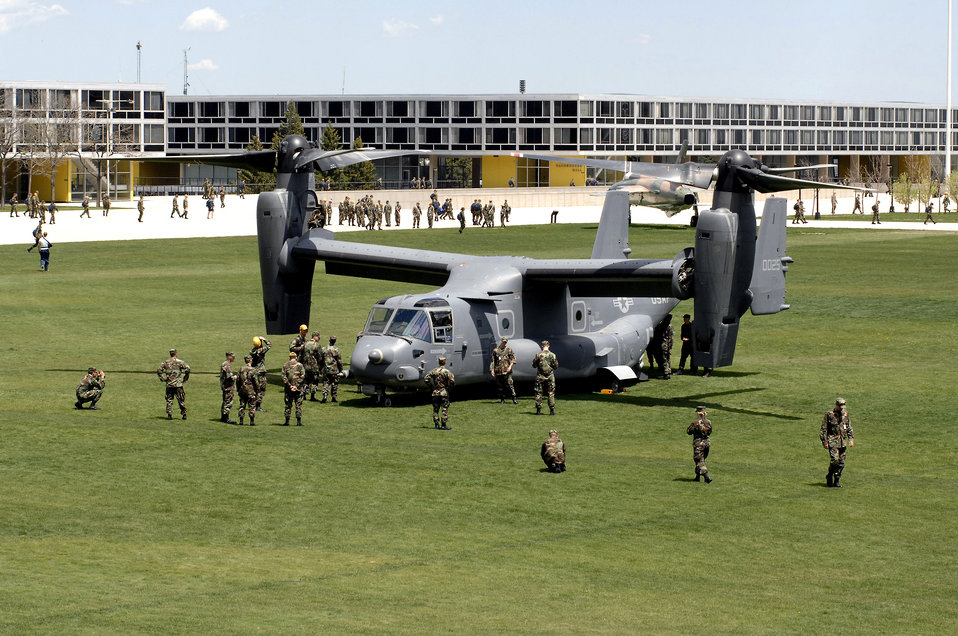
Osprey comes for a visit

Cadets and active-duty troops swarm around a CV-22 Osprey after it landed at the U.S. Air Force Academy May 11. Cadets in the Department of Aeronautical Engineering's High-Performance Computing Research Center contributed to making this aircraft an operational reality through their research in computational fluid dynamics.